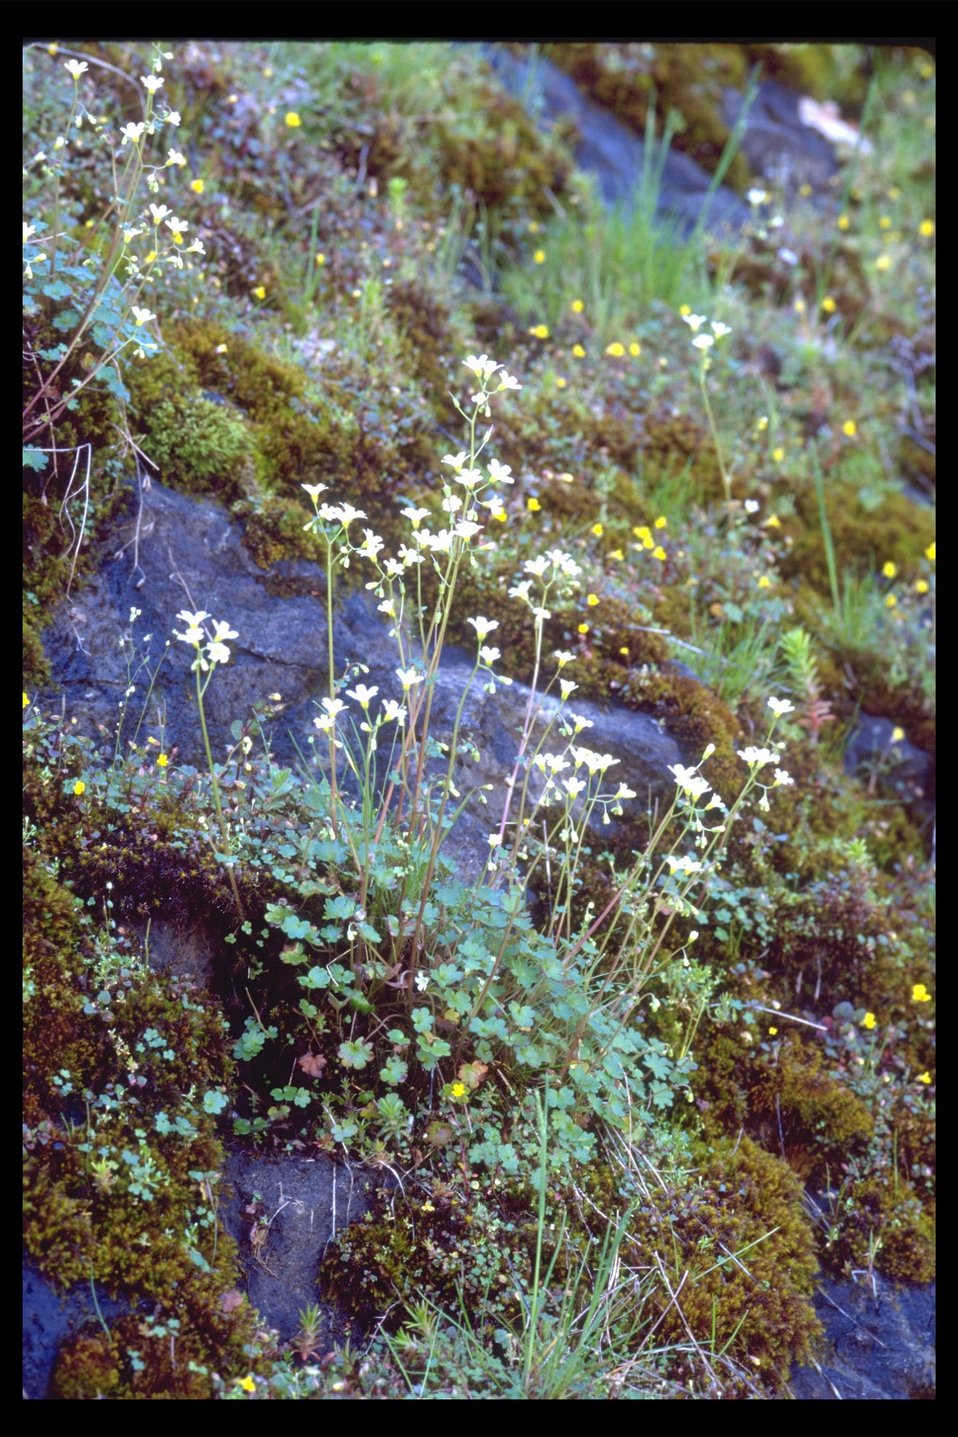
Mistmaids (Romanzoffia californica) at Shady Cove near the Rogue River.